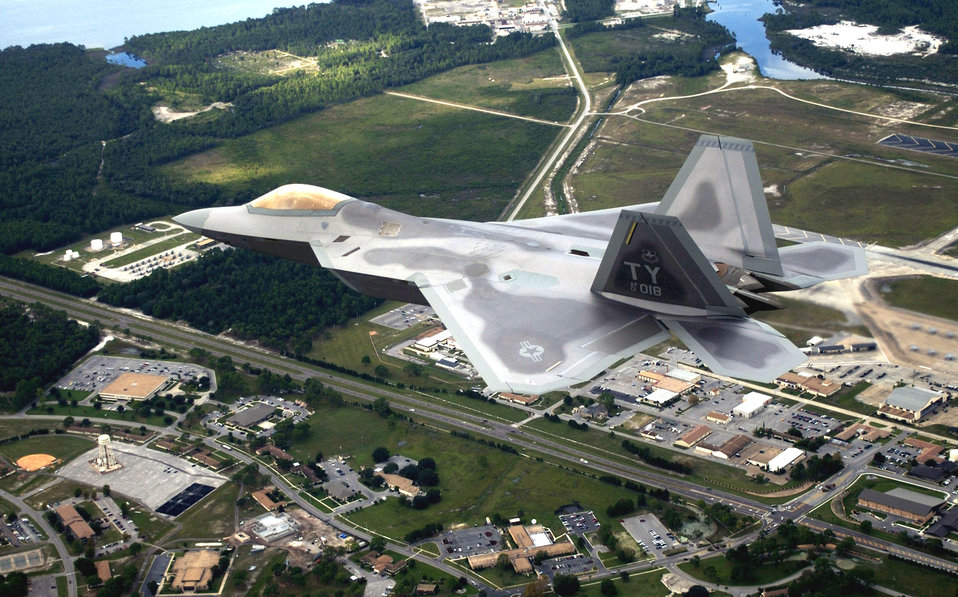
Home base

TYNDALL AIR FORCE BASE, Fla. -- The first operational F/A-22 Raptor flies over the base on its delivery flight. Tyndall is home of the world's first F/A-22 squadron.